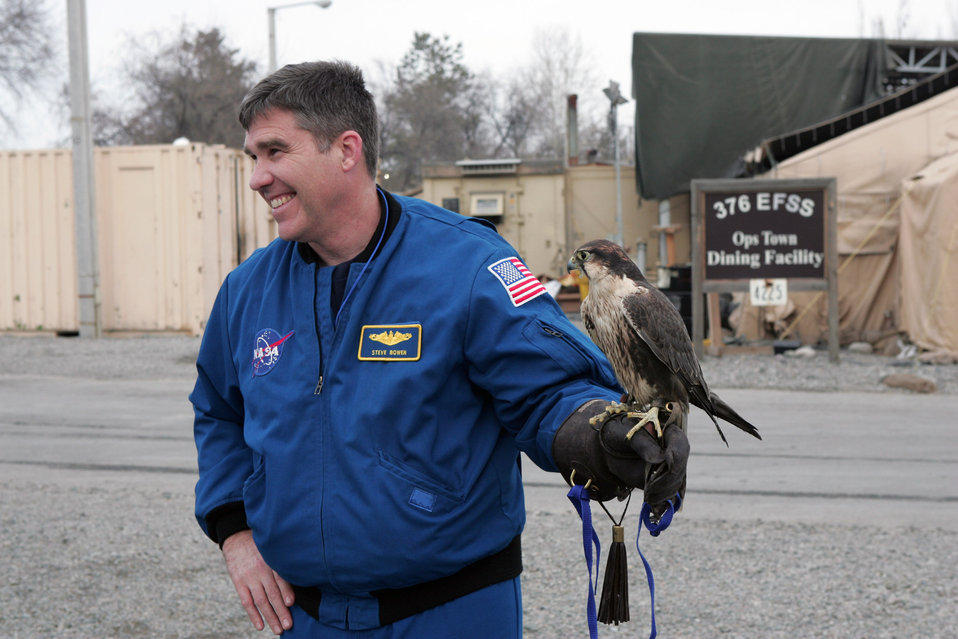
NASA astronauts touch down at Manas Air Base, Kyrgyzstan

Navy Capt. Steve Bowen, a NASA astronaut, poses for a picture with Mustang, one of two falcons trained to keep birds away from the airfield, during a tour of Manas Air Base, Kyrgyzstan, Jan. 28. The crew of the Space Shuttle Endeavour STS-126 mission visited with Airmen and local Kyrgyz school children during their two-day visit here.